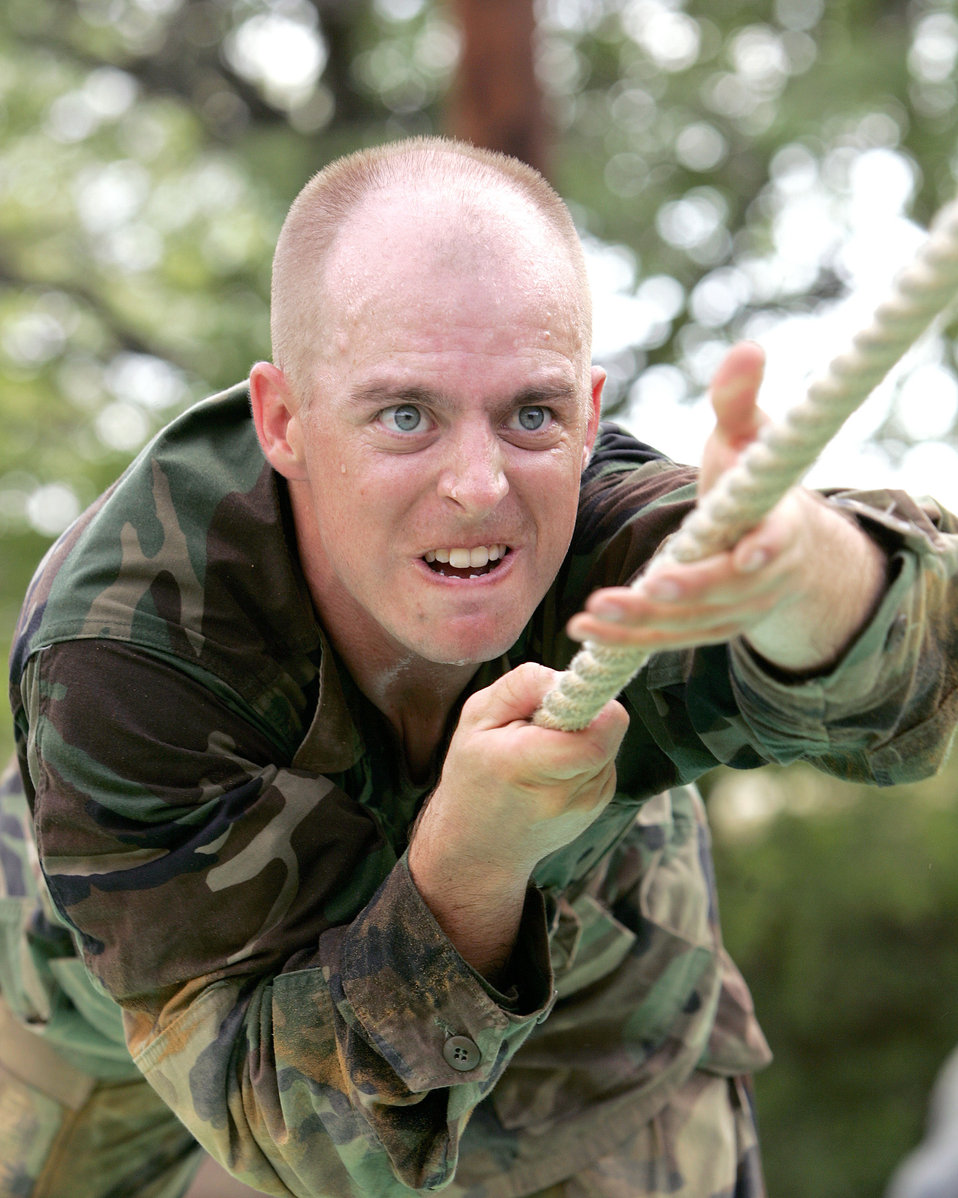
Basic trainee in excercise

A determined Airman Basic James Lemison negotiates a water obstacle by pulling himself across on a rope Thursday, August 3, 2006 at the confidence course at Lackland Air Force Base, Texas. Lemison with the 323rd Training Squadron, Flight 599, is in his fourth week of basic military training at Lackland.